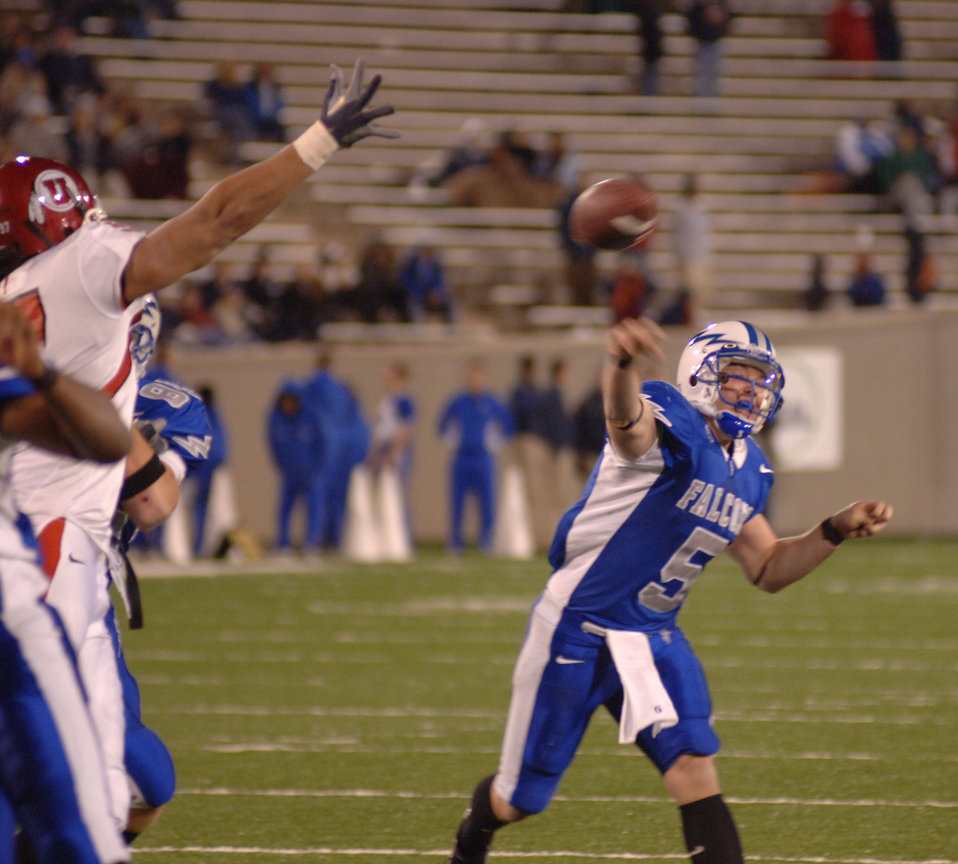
Touchdown Strike

Air Force quarterback Shaun Carney throws a six-yard touchdown strike to receiver Victor Thompson early in the fourth quarter against Utah Nov. 18 in Colorado Springs, Colo. It was the first of two scores by the Falcons in the fourth quarter but not quite enough to hold off the Utes, who game-winning field goal as time expired seal a 17-14 Utah win.